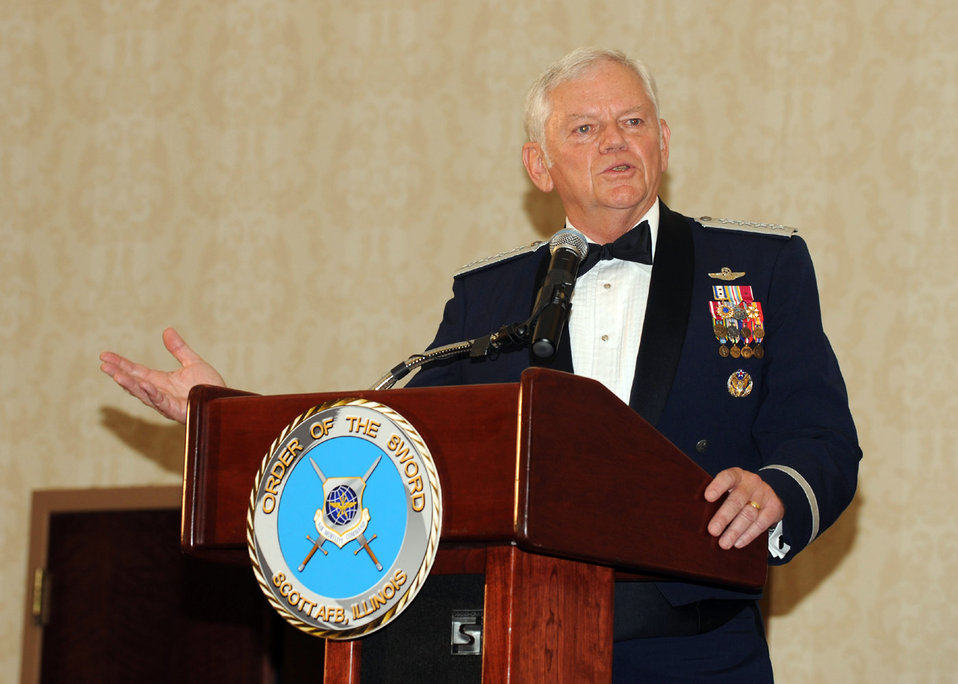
AMC commander receives Order of the Sword

Gen. Arthur J. Lichte speaks to Air Mobility Command Airmen at his induction ceremony to the AMC Order of the Sword Aug. 14 at Scott Air Force Base, Ill. General Lichte is the commander of AMC.